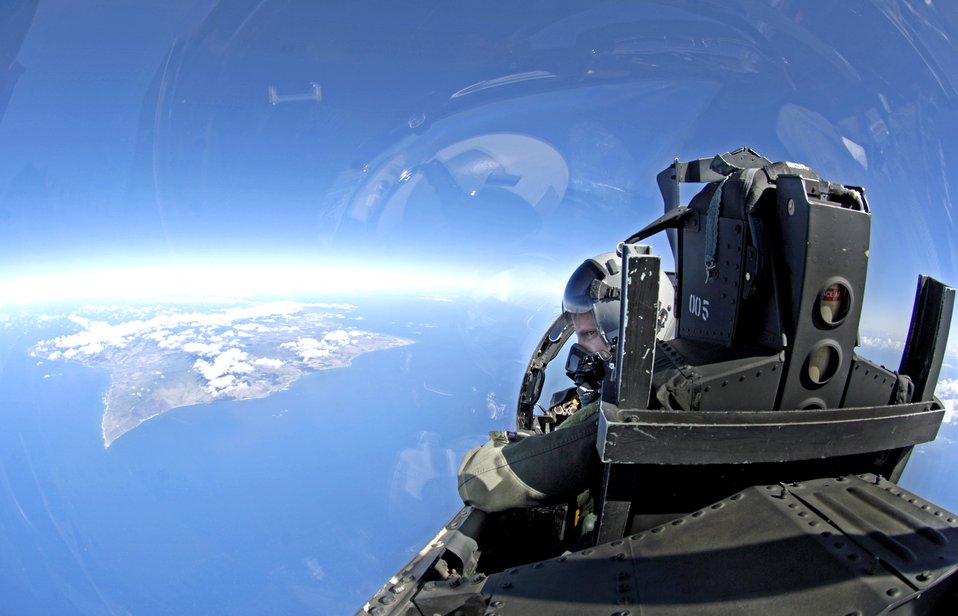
Total force at work in RIMPAC

Capt. Michael Blake looks out of his F-15 Eagle on approach to the island of Oahu, Hawaii, on July 16. He was flying a mission in support of the Rim of the Pacific Exercise 2006. The captain is a pilot with the Hawaii Air National Guard's 199th Fighter Squadron.